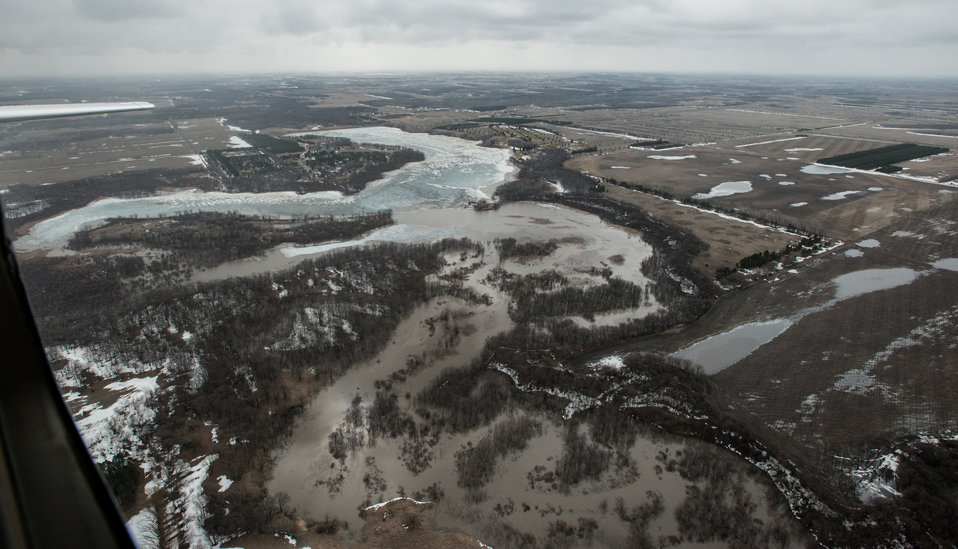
Renwick Dam, in Pembina County, ND, part of the Red River basin, on Wednesday, May 1, 2013. For information about this and other programs from the USDA Red River Basin Initiative (RRBI) please see www.mn.nrcs.usda.gov/news/features13/RRBI.html.